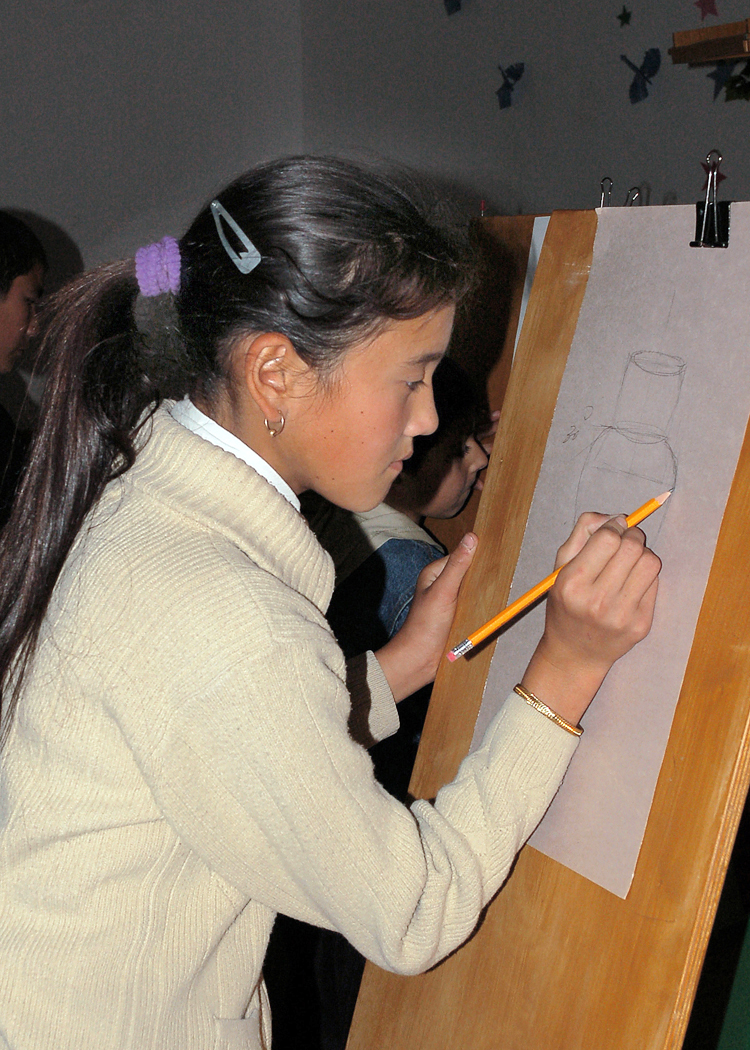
Stateside donations give Kyrgyz students tools of art trade

A student at Manas Village School draws a picture using an easel that was recently donated by the 376th Expeditionary Medical Group at Manas Air Base, Kyrgyzstan. The easels were built by students at Kingswood Regional High School in Kingswood, N.H.